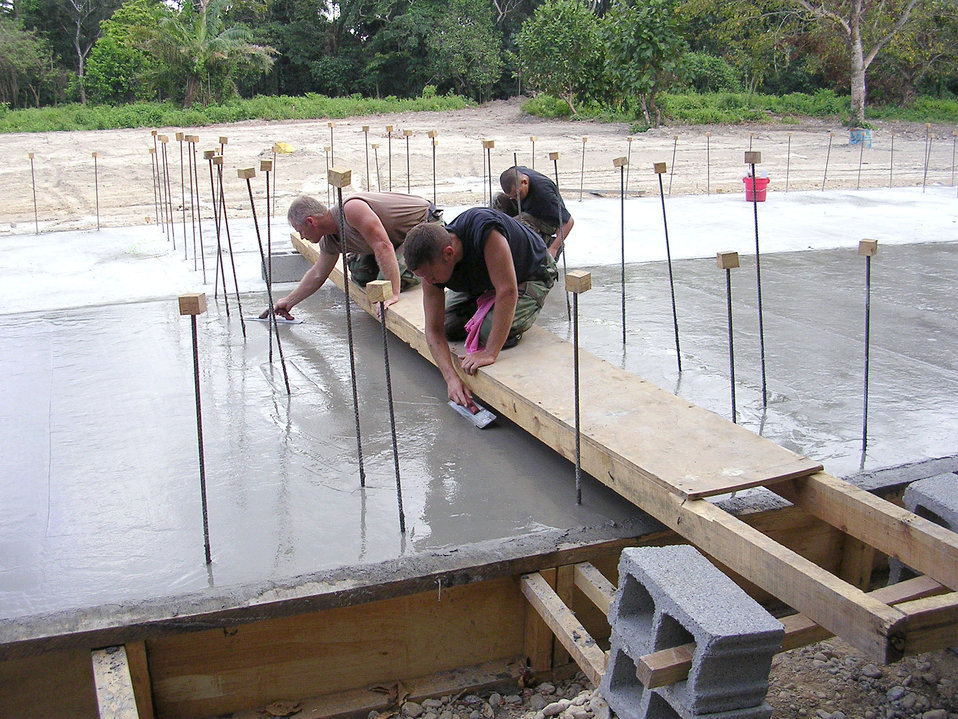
Alaskan team build school in Honduras

Senior Master Sgt. Mike Miller and Staff Sgt. Todd Benson use a bridge to reach areas of the El Cacao school foundation that needed to be smoothed while Senior Airman Julian Sisneros (background) smoothes the concrete along the edges. 17 Airmen are deployed from the 354th Civil Engineer Squadron at Eielson Air Force Base, Alaska, in support of New Horizons 2006-Honduras.